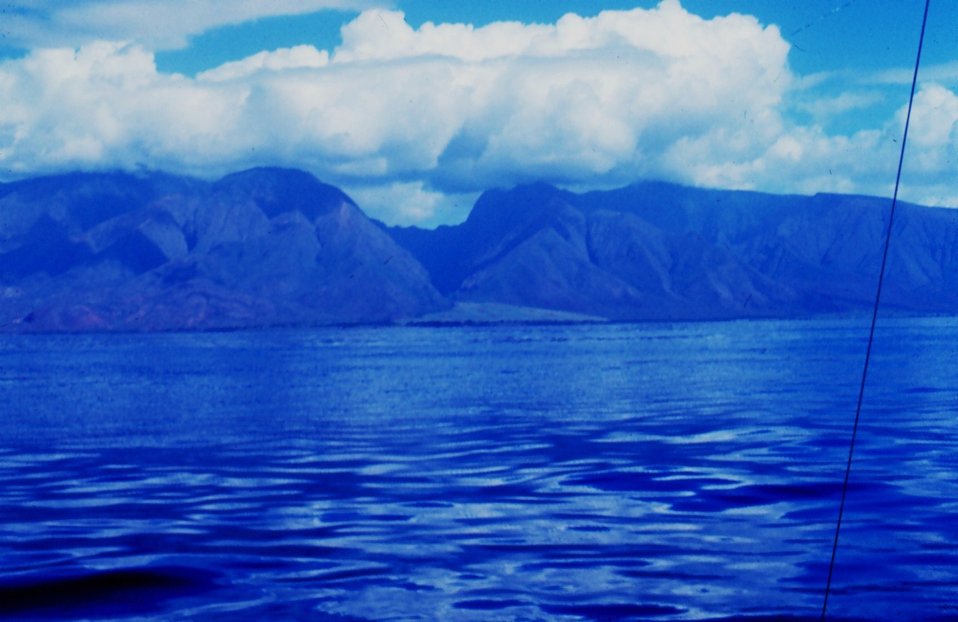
Lanai-Maui trip